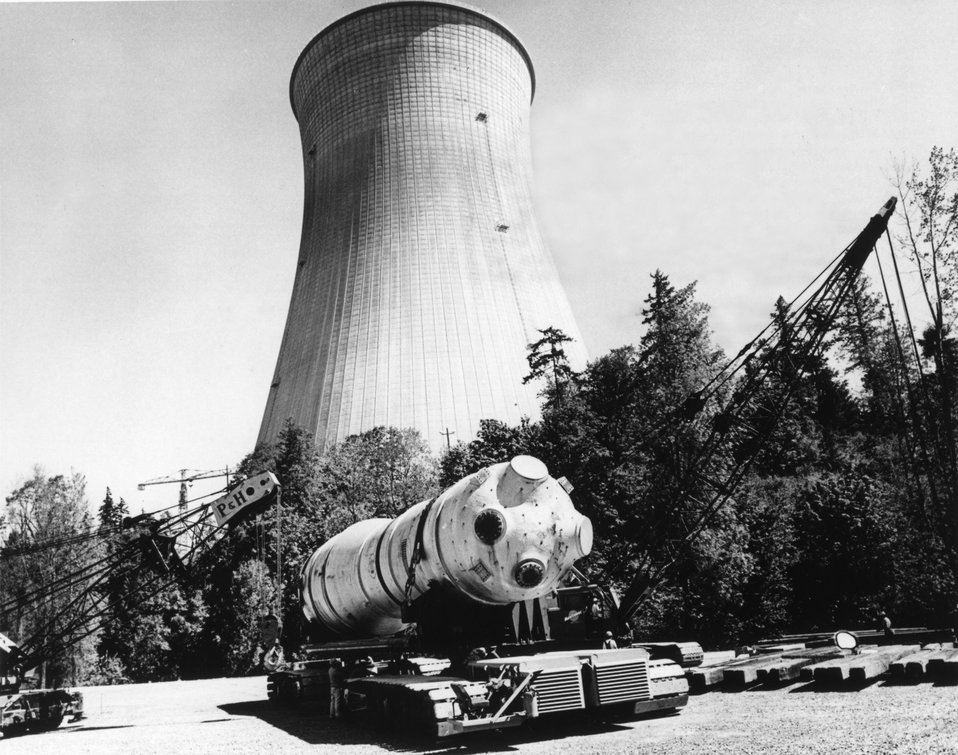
A giant steam generator arrives at the site of the Portland General Electric Co.'s Trojan Plant site on the Columbia River near Prescott, Illinois. Circa 1974.